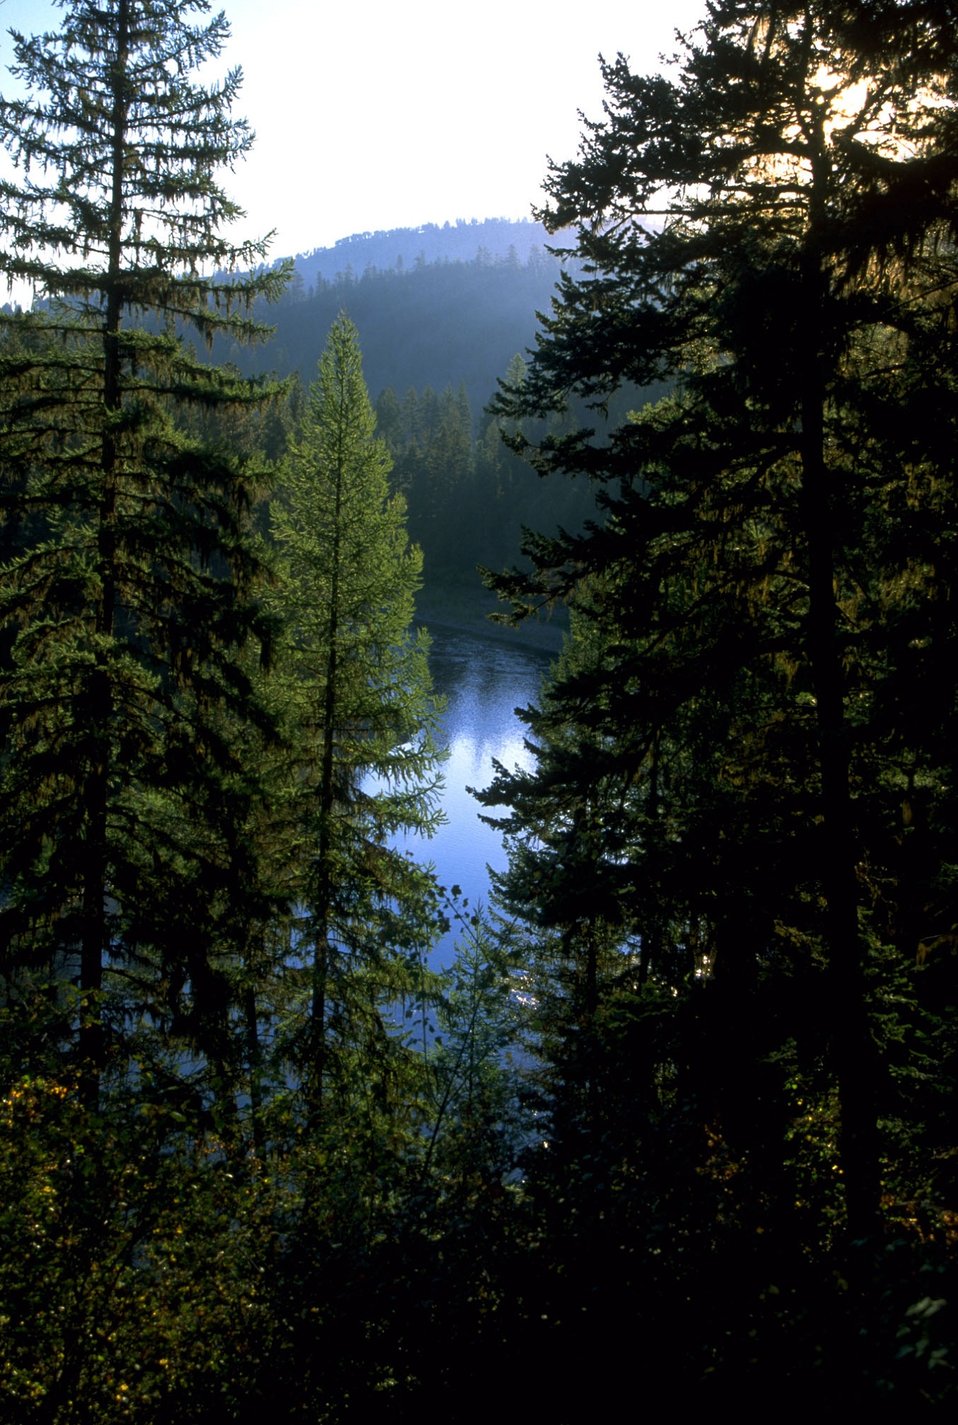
Early monrning on the Blackfoot River VERTICAL